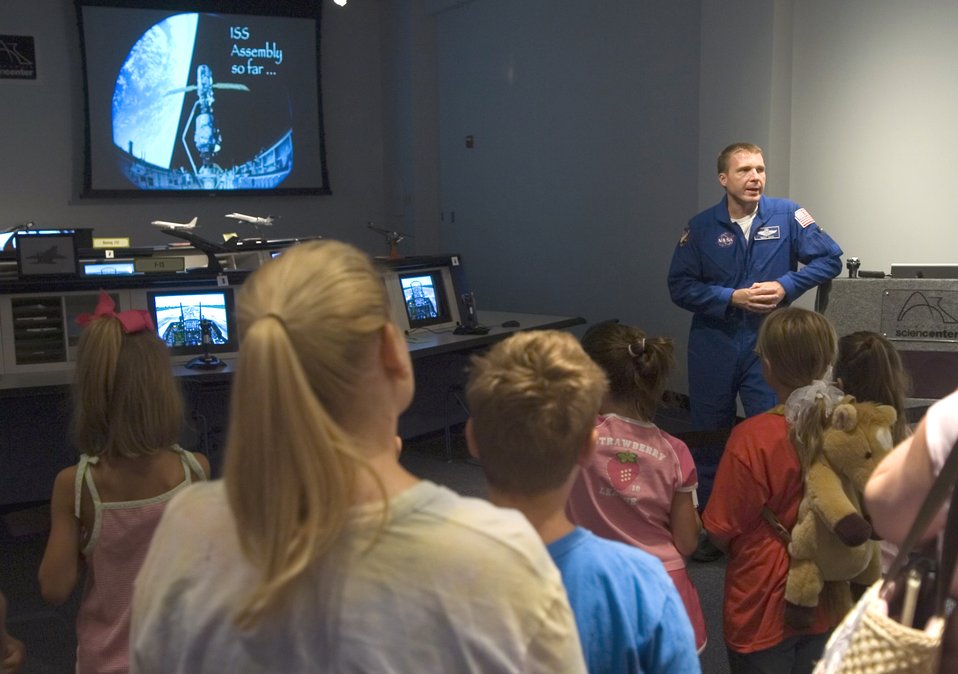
Focus on flight

Lt. Col. Terry Virts Jr., a NASA astronaut, speaks to children about the Air Force and his career as an astronaut at the St. Louis Science Center Aug. 9. The event was one of several activities taking place in the greater St. Louis area celebrating Air Force Week.